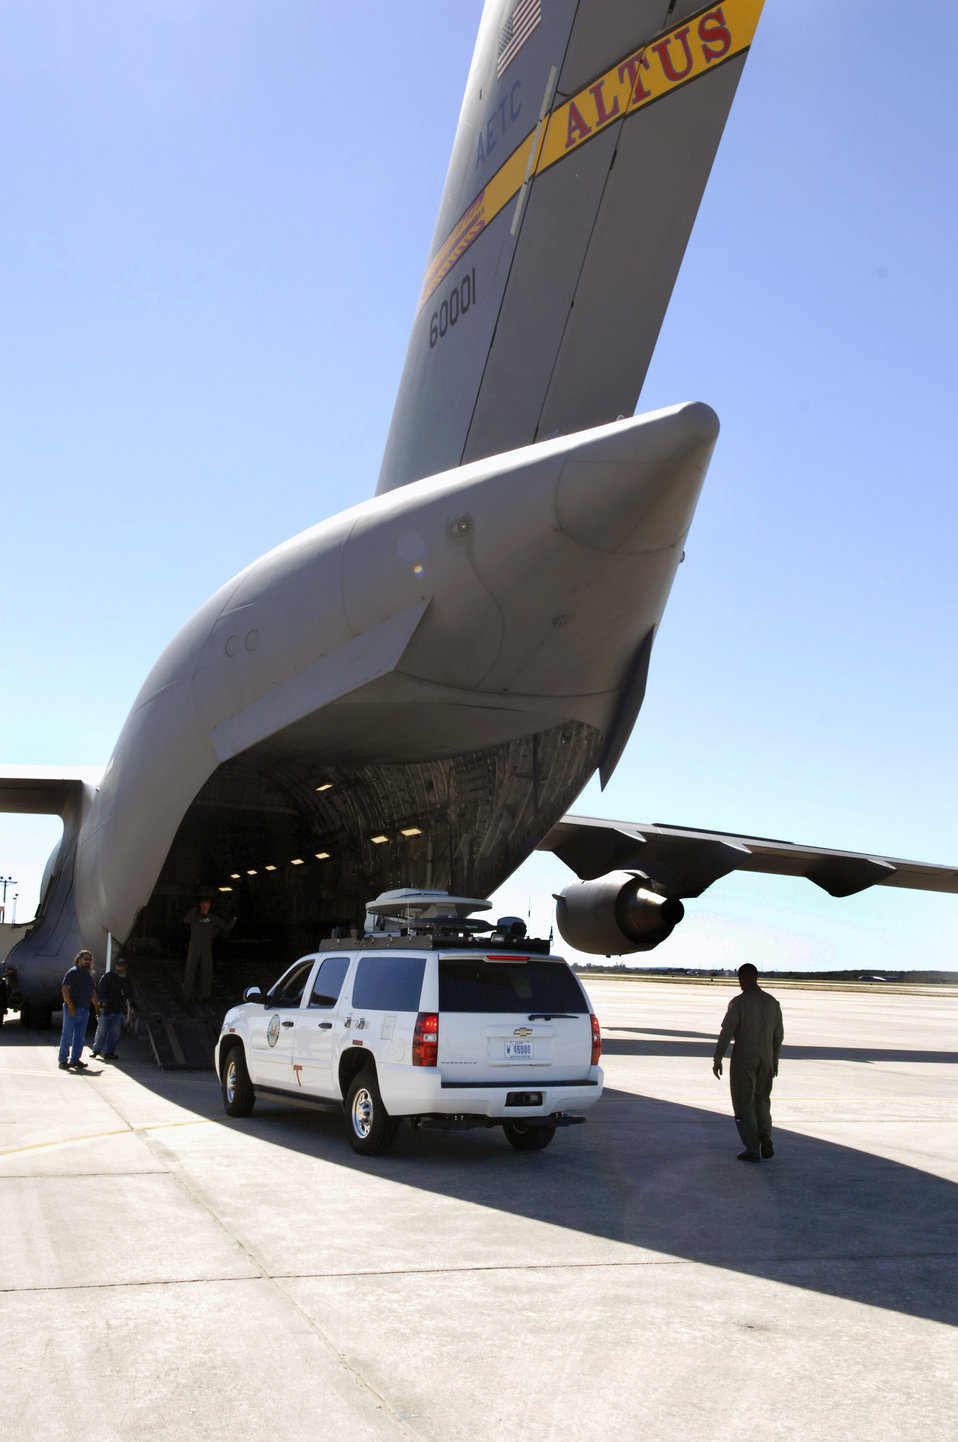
Globemaster delivers Army equipment to fight wildfires

Members of the 97th Operations Support Squadron and the 58th Airlift Squadron load Soldiers and an Army emergency response vehicle onto a C-17 Globemaster III Oct. 24 at San Antonio. The emergency response vehicle is being airlifted to California to help support personnel battle the wildfires. Members of the 97th OSS and the 58th AS, as well as the C-17 are from Altus Air Force Base, Okla. The Army Soldiers and equipment are from U.S. Army North based at Fort Sam Houston in San Antonio.